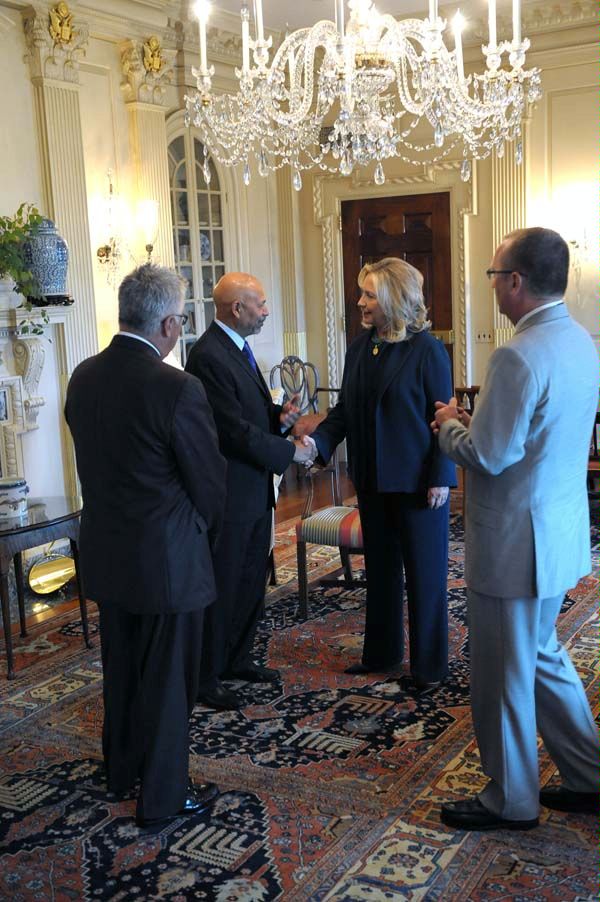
Secretary Clinton Meets With Newly Credentialed Libyan Ambassador Aujali

U.S. Secretary of State Hillary Rodham Clinton meets with newly credentialed Libyan Ambassador Aujali at the U.S. Department of State in Washington, D.C., on September 8, 2011.